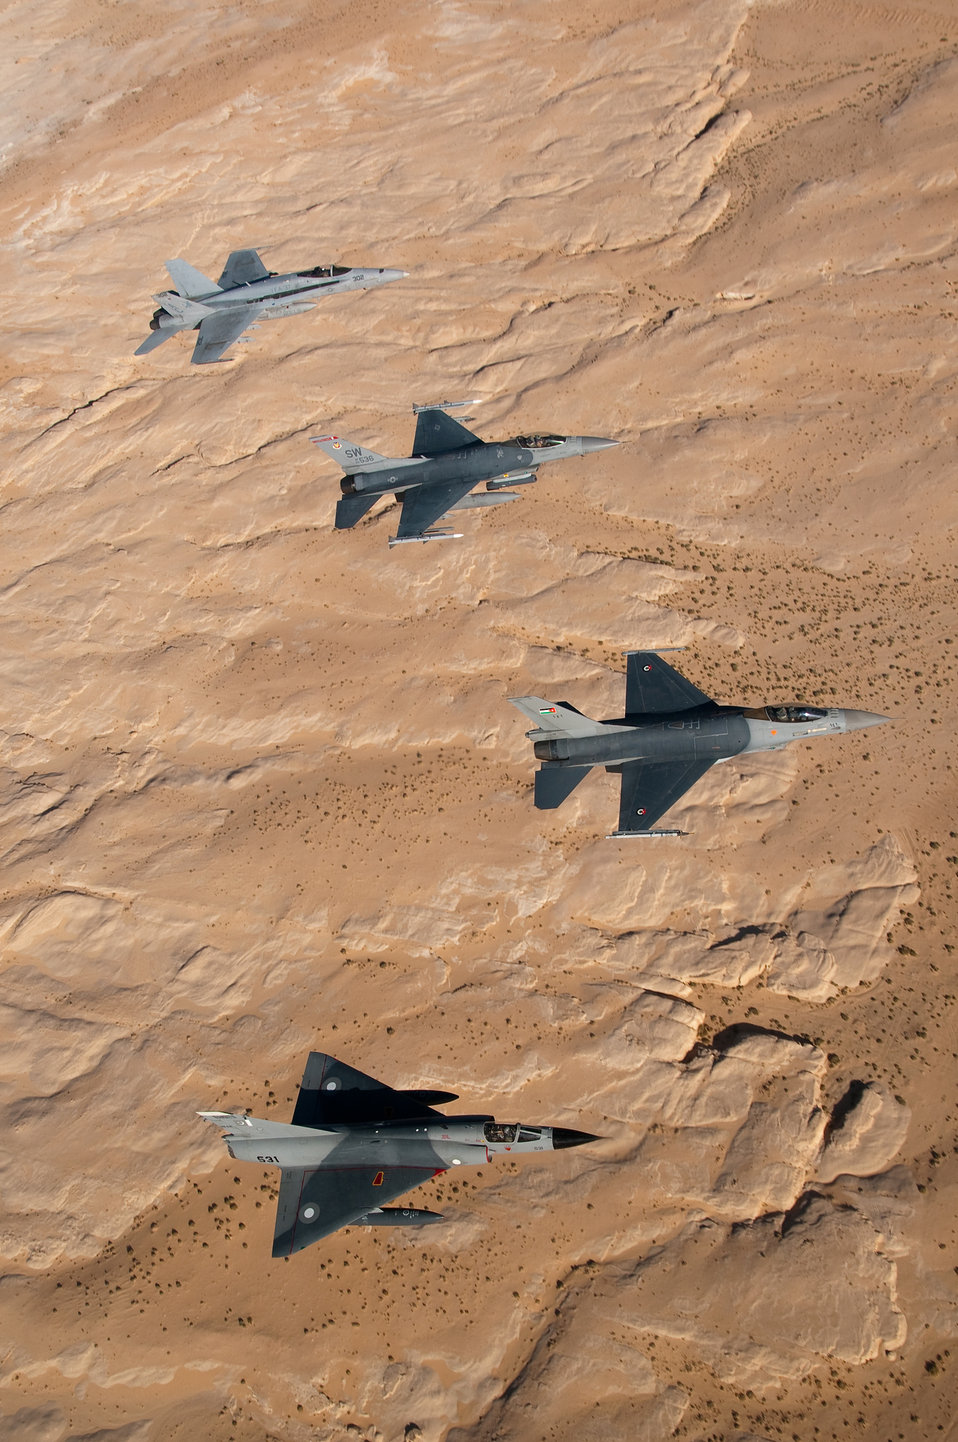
All together now

An F-18 Super Hornet from the USS Harry S. Truman aircraft carrier, an F-16 Fighting Falcon from the 20th Fighter Wing at Shaw Air Force Base, S.C., an F-16 from the Royal Jordanian Air Force and a Mirage from the Pakistan air force fly in formation over Wadi Rum in Jordan, Oct. 27, 2010. The flight formation occurred during the 2010 Falcon Air Meet at Muwaffaq Salti Air Base, Jordan.